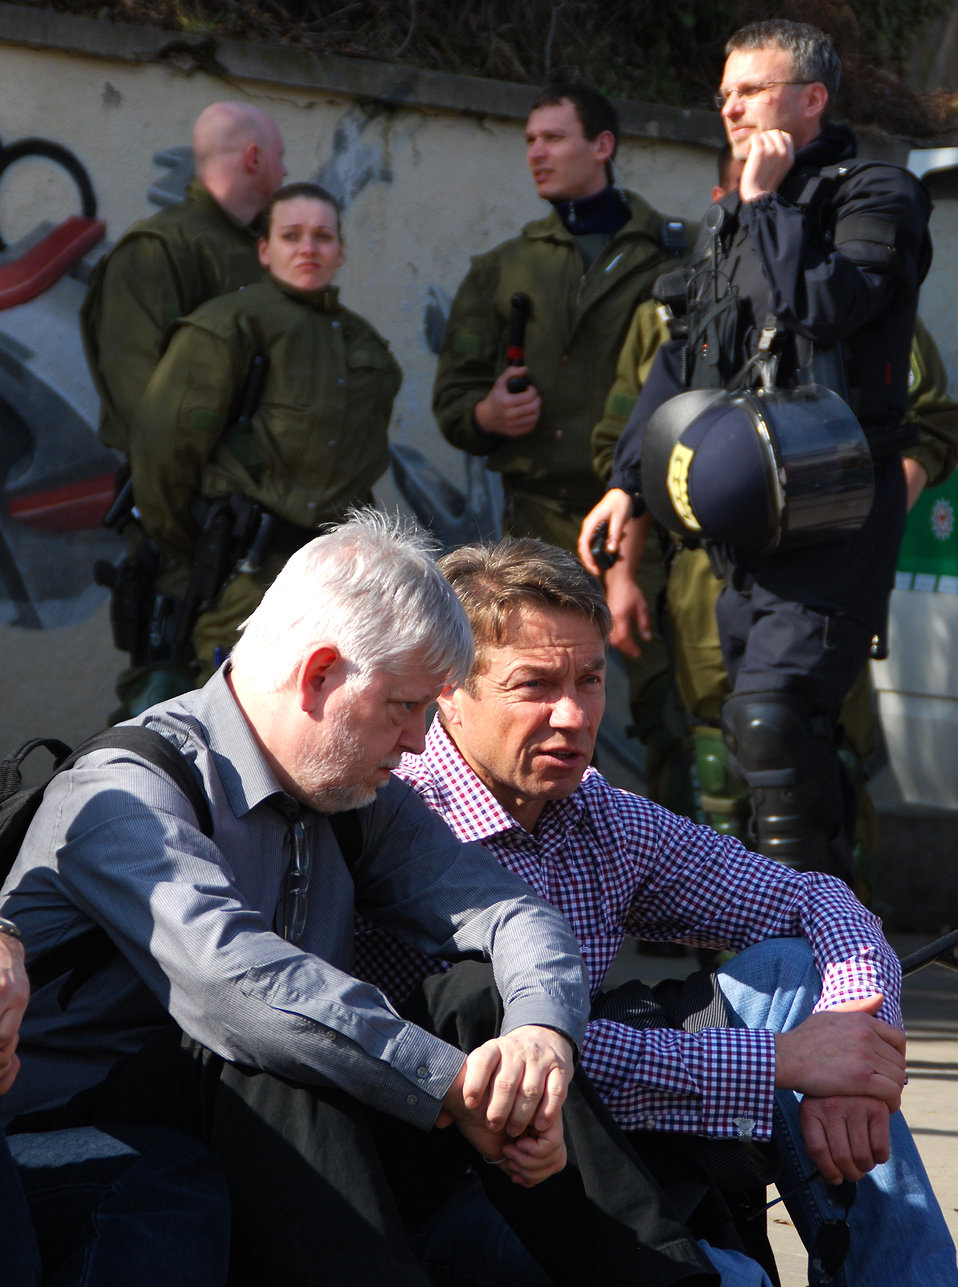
Proteste gegen den Nazi-Aufmarsch am 24.3.2012 in Frankfurt (Oder), mit Helmuth Markov, Finanzminister des Landes Brandenburg und Günter Baaske, Sozialminister des Landes Brandenburg